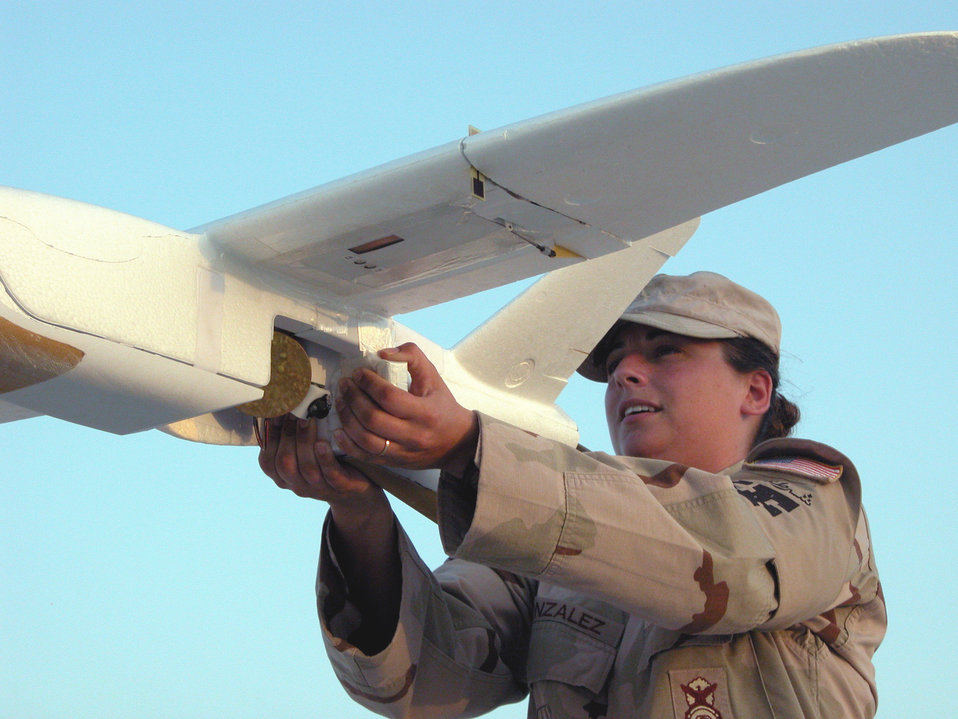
Desert Hawk gives security forces an eye in sky

SOUTHWEST ASIA -- Staff Sgt. Nancy Gonzalez prepares to launch a Desert Hawk unmanned aerial vehicle. Desert Hawk operators slingshot the craft into the air with a 50-foot bungee cord. Sergeant Gonzalez is the noncommissioned officer in charge of the 379th Security Forces Squadron's airborne surveillance program and is deployed from Spangdahlem Air Base, Germany.